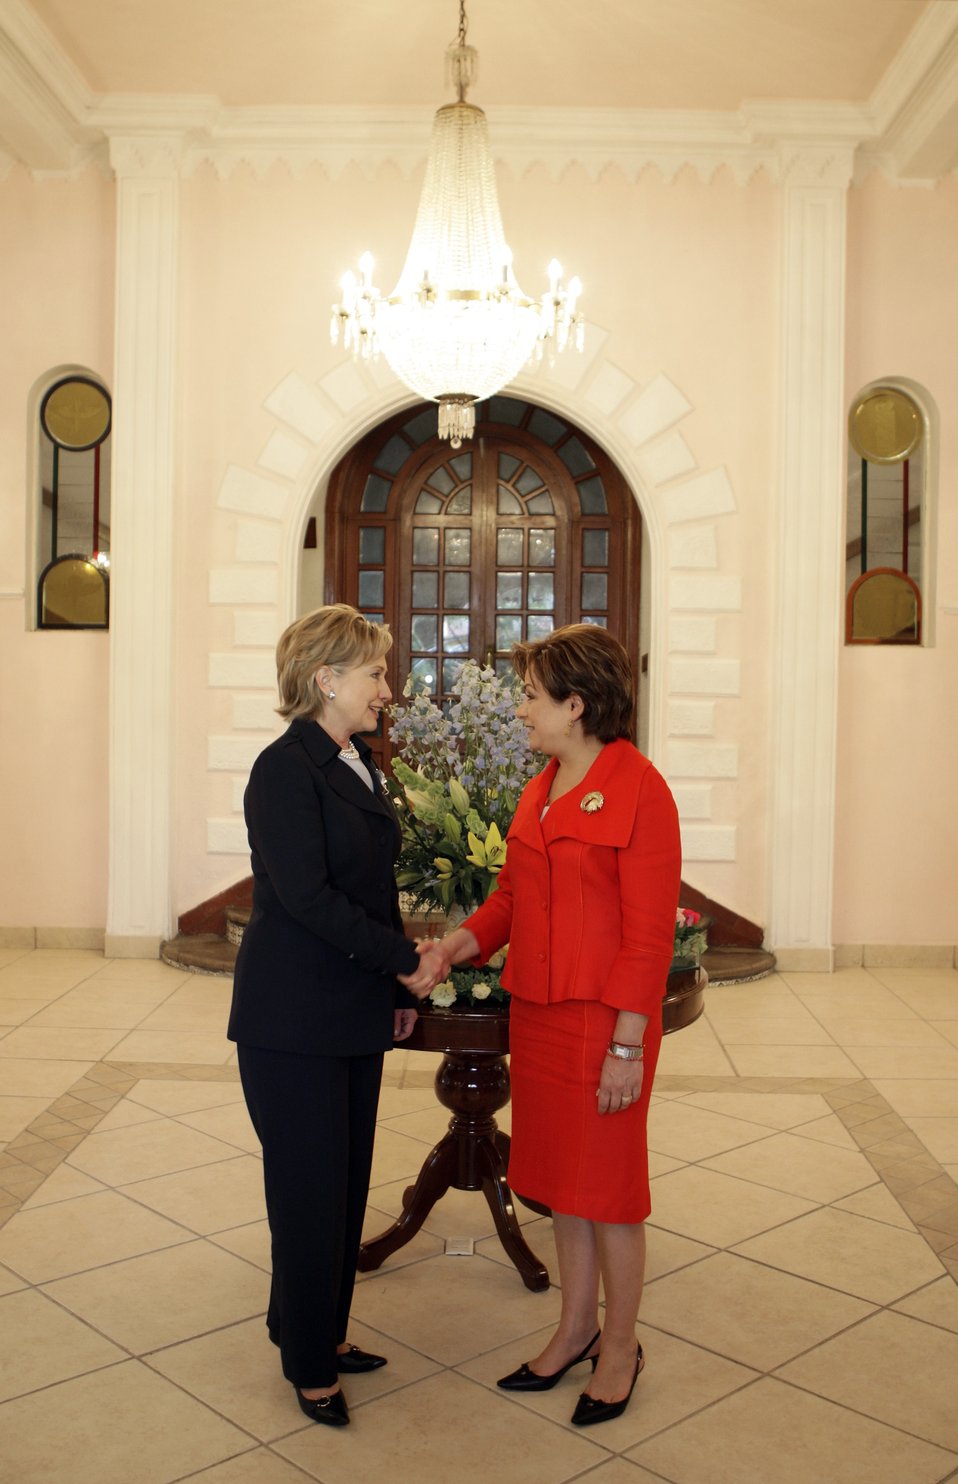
Secretary Clinton Meets Mexican Foreign Minister

U.S. Secretary of State Hillary Clinton is greeted by Mexican Foreign Minister Patricia Espinosa as she arrives at Los Pinos presidential residence in Mexico City, March 25, 2009. Clinton is in Mexico for a two-day visit.